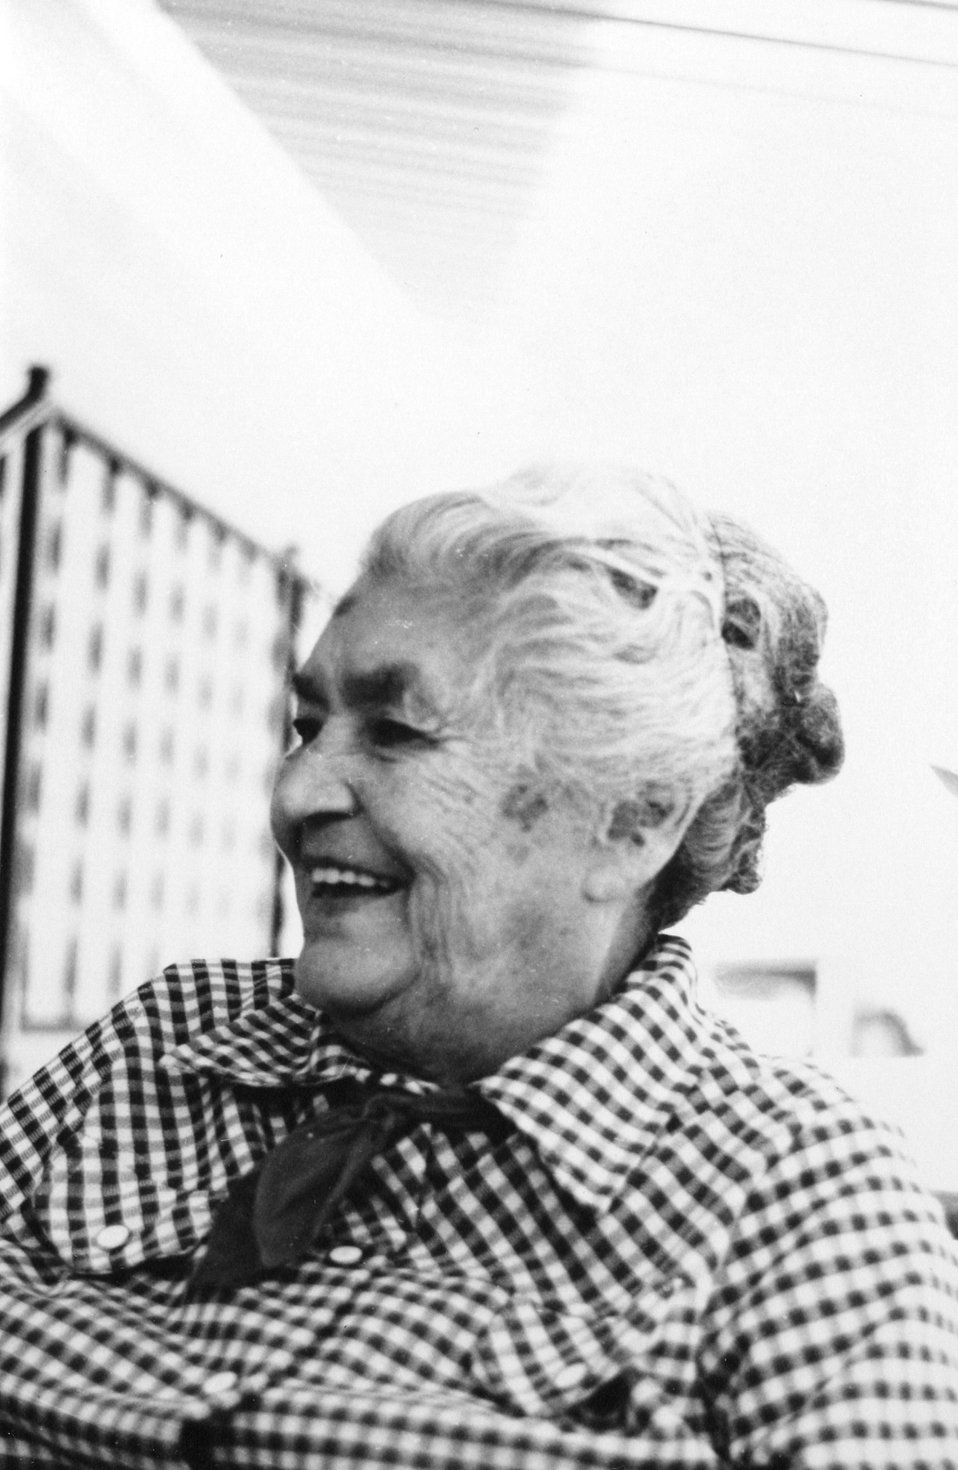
Marial Billings Akesson born September 22, 1894.